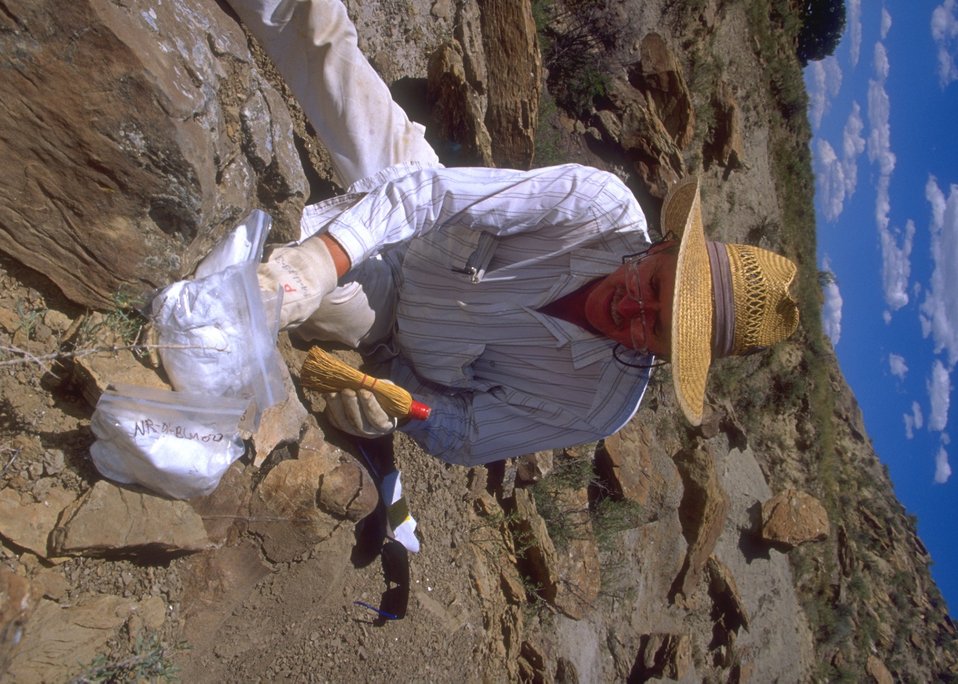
Paleontologist working a dig for dinosaur bones, Lance Creek Fossil Area, Newcastle Field Office.